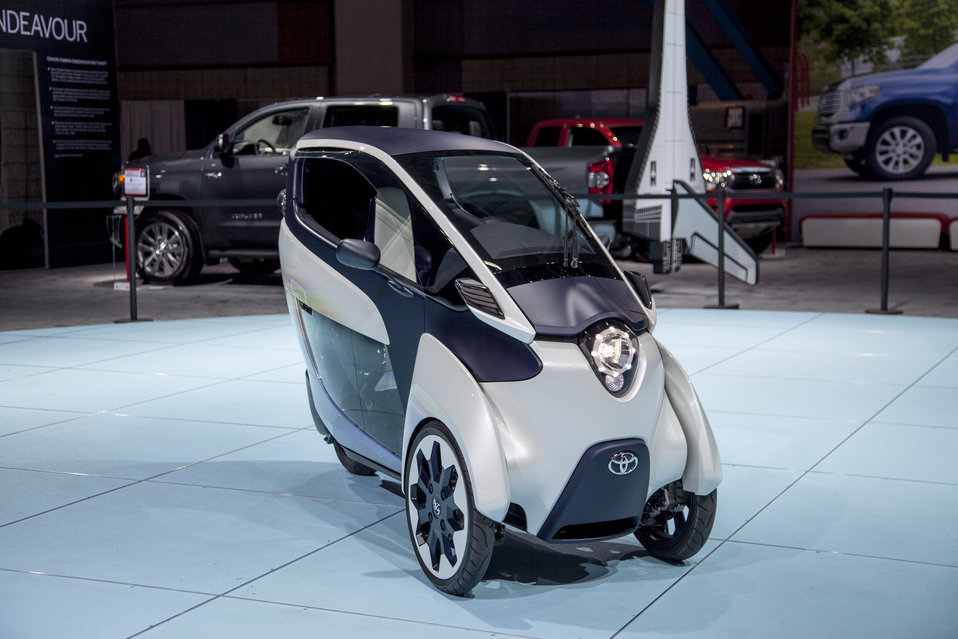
Toyota i-Road

On display at the Washington Auto Show was Toyota’s i-Road personal mobility concept car. Less than 34 inches wide and 93 inches long, the i-Road is an ultra compact, two-seater electric vehicle that is estimated to have a driving range of 31 miles on a single charge.